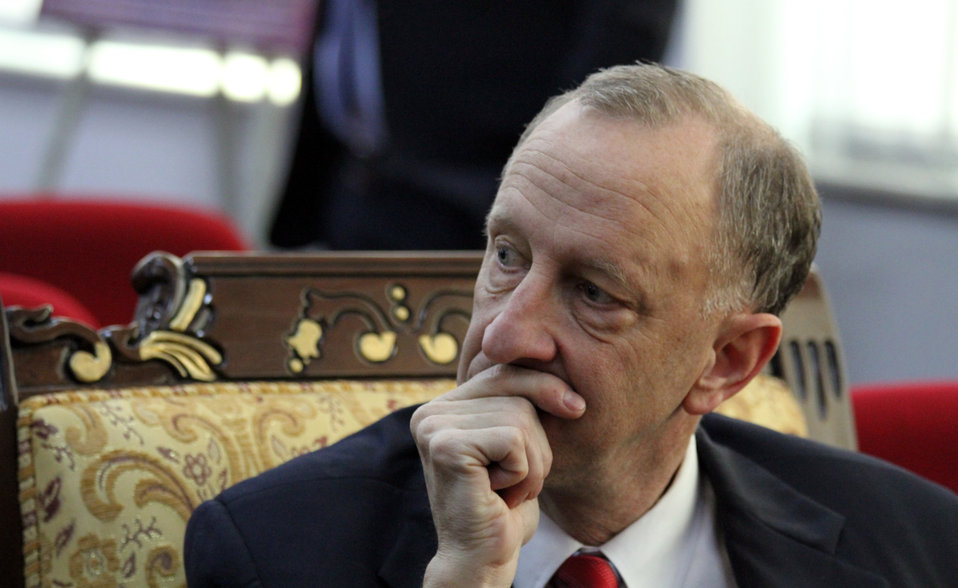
Afghanistan Final National Round of the 2013 Philip C.Jessup International Law Moot Court Competition